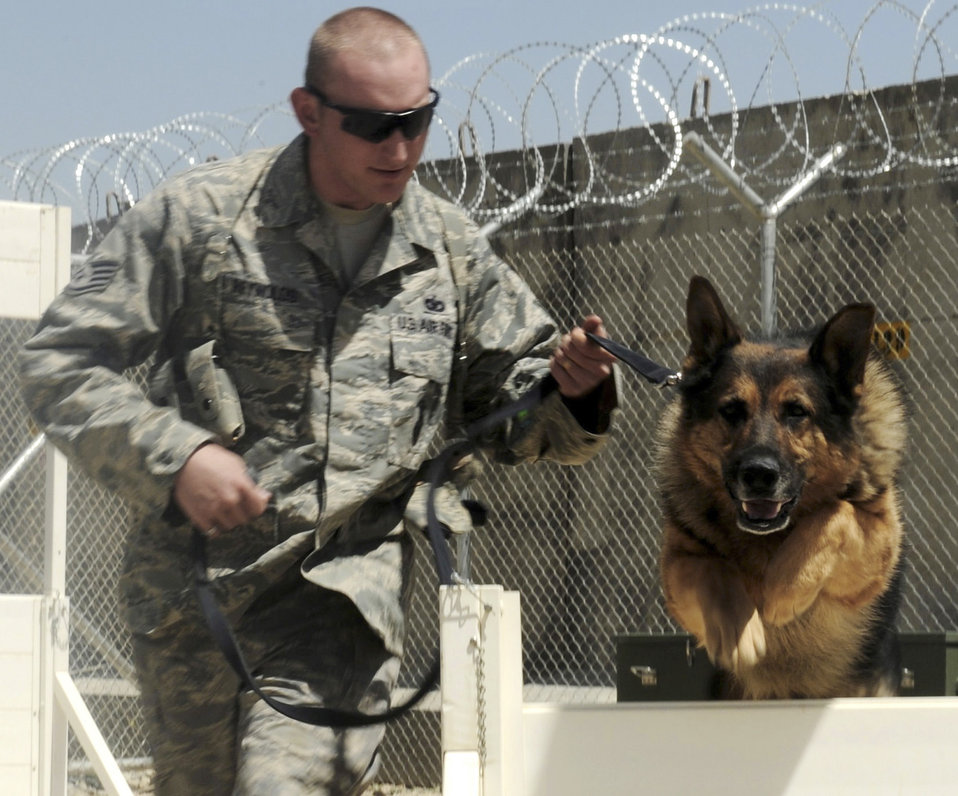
Dog days of summer

Staff Sgt. Chris Reynolds runs his German shepherd, Baiky, through a training obstacle course Aug. 7 at Bagram Airfield, Afghanistan. Sergeant Reynolds, an eight-year Air Force veteran, is a dog handler with the 455th Expeditionary Security Forces Squadron and is deployed from Vandenberg Air Force Base, Calif. He and his dog patrol the base and inspect mail, luggage and vehicles for narcotics.